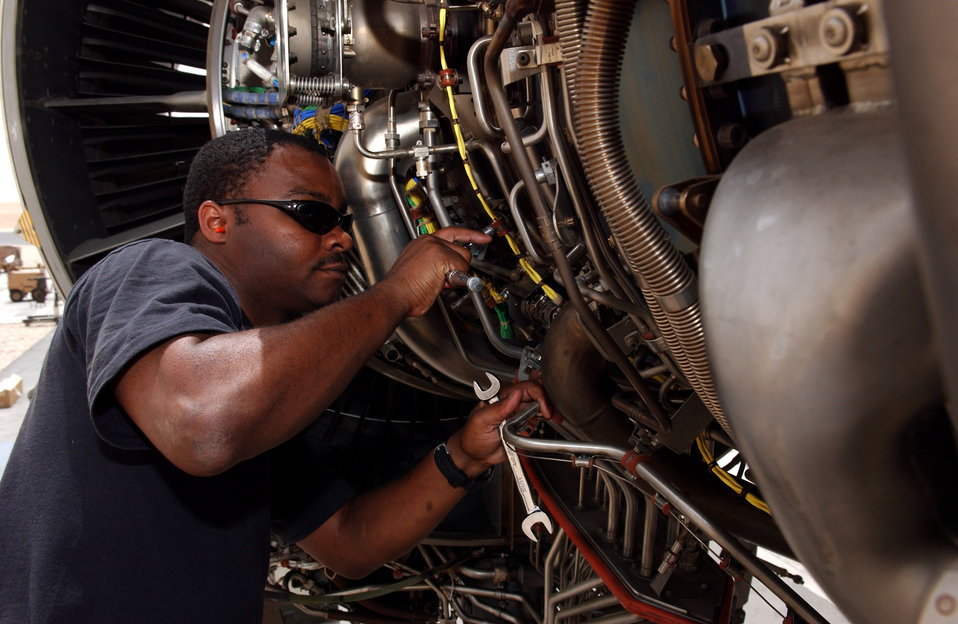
Strategic maintenance gives Airmen diverse experience

Staff Sgt. Ronald Broughton works on a C-17 Globemaster III jet engine at a desert base on Tuesday, May 2, 2006. The Airman is a propulsion specialist deployed from McChord Air Force Base, Wash., to work with the 8th Expeditionary Air Mobility Squadron.